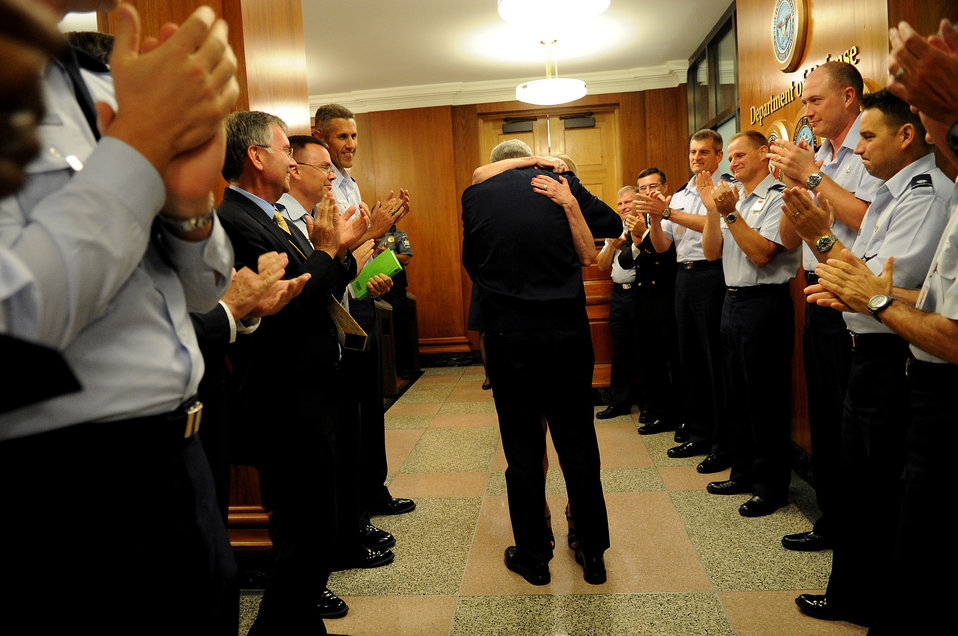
AF Chief of Staff

Gen. Norton Schwartz embraces his wife Suzie while departing from the Pentagon Aug. 8, 2012, for the final time as the Air Force Chief of Staff.Schwartz will retire in a ceremony Friday, after serving 39 years in the Air Force, the last four years as the Air Force's senior uniformed leader.